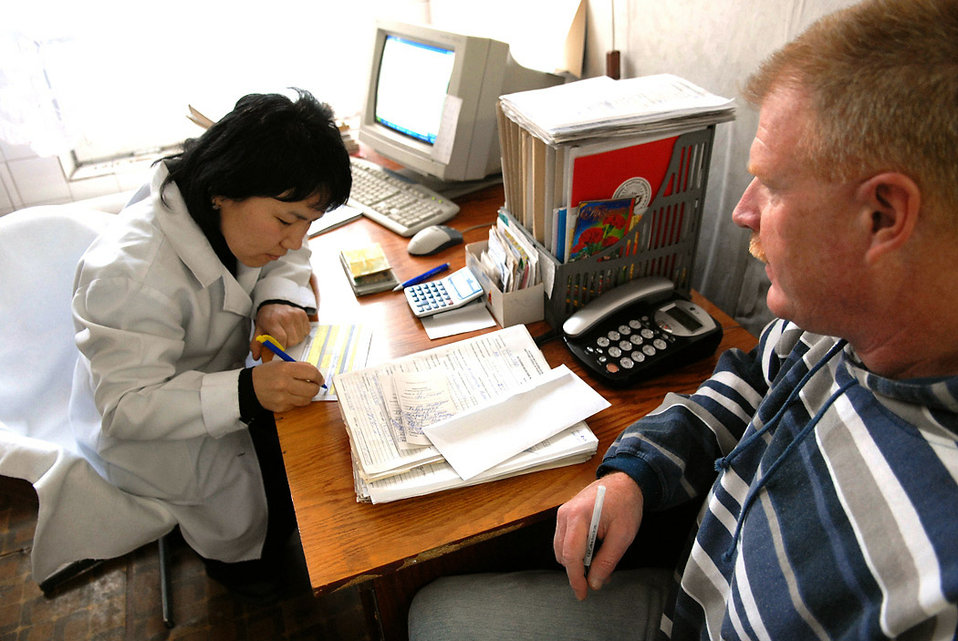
The heart of giving

Master Sgt. Tommy Cannon provides donated funding from Manas Air Base, Kyrgyzstan, Airmen for two heart surgeries performed Dec. 3 in Bishkek, Kyrgyzstan. Over the past five years, $71,680 of contributions from base Airmen have funded heart operations on 128 children. Sergeant Cannon is the 376th Expeditionary Logistics Readiness Squadron ammunition flight superintendent.